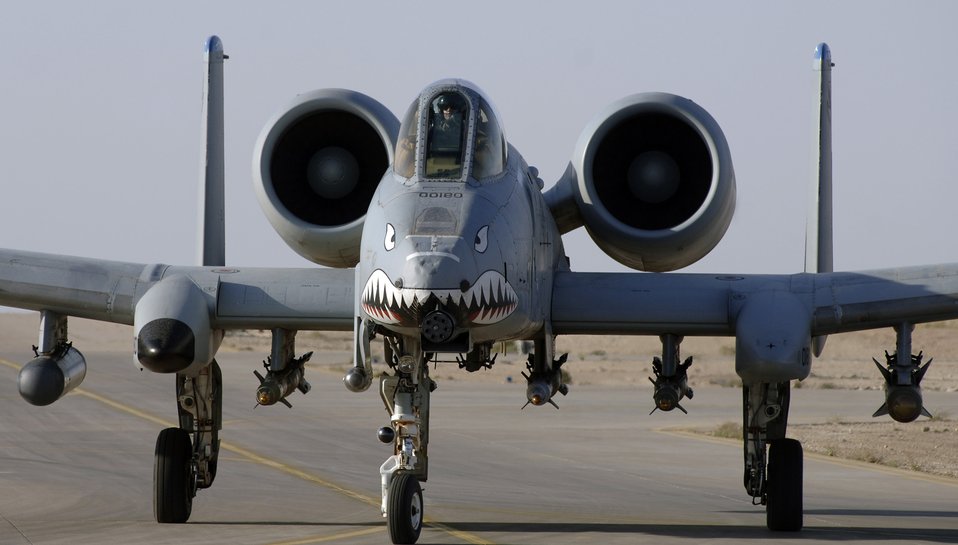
Feb. 3 airpower summary: A-10s provide top cover

An A-10 Thunderbolt II prepares to take off from a Southwest Asia air base to provide close-air support to ground troops in Iraq. The A-10s perform shows of force to deter enemy forces and provide top cover for coalition forces.